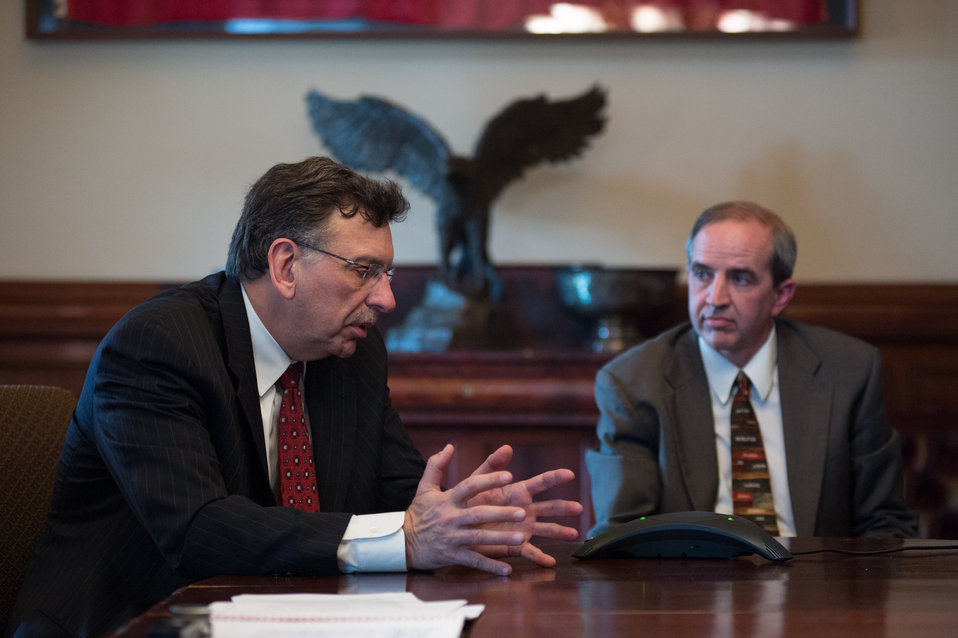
Innovation Center for U.S. Dairy Chief Executive Office (CEO) Tom Gallagher and Spruce Haven Farm and Research Center General Partner Doug Young respond to a question from the news media during a teleconference call after the signing of a Memorandum of Understanding (MOU) with Agriculture Secretary Tom Vilsack at the Innovation Center For U.S. Dairy Sustainability Council Meeting, on Wednesday, Apr. 24, 2013. The teleconference took place in the historic Secretary of War suite at the White House, in Washington, D.C. The objectives of the MOU are to increase the construction of anaerobic digesters and explore innovative ways to use products previously considered waste streams from dairy production, processing and handling.